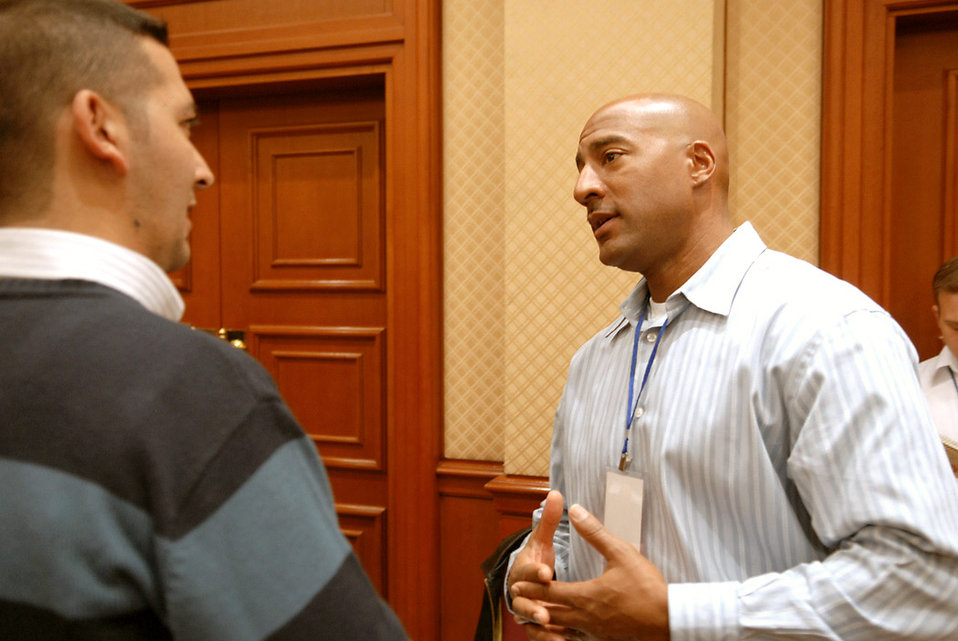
Manas officials host Vendor's Day in Kyrgyzstan

Master Sgt. Kenneth Baptiste explains the process of obtaining contracts with the base during their vendor day Nov. 13 at the Hyatt in Bishkek, Kyrgyzstan. The vendor day shared with local businesses how to bid and compete for contracts at Manas Air Base, Kyrgyzstan. Sergeant Baptiste is the 376th Expeditionary Force Support Squadron recreation chief.